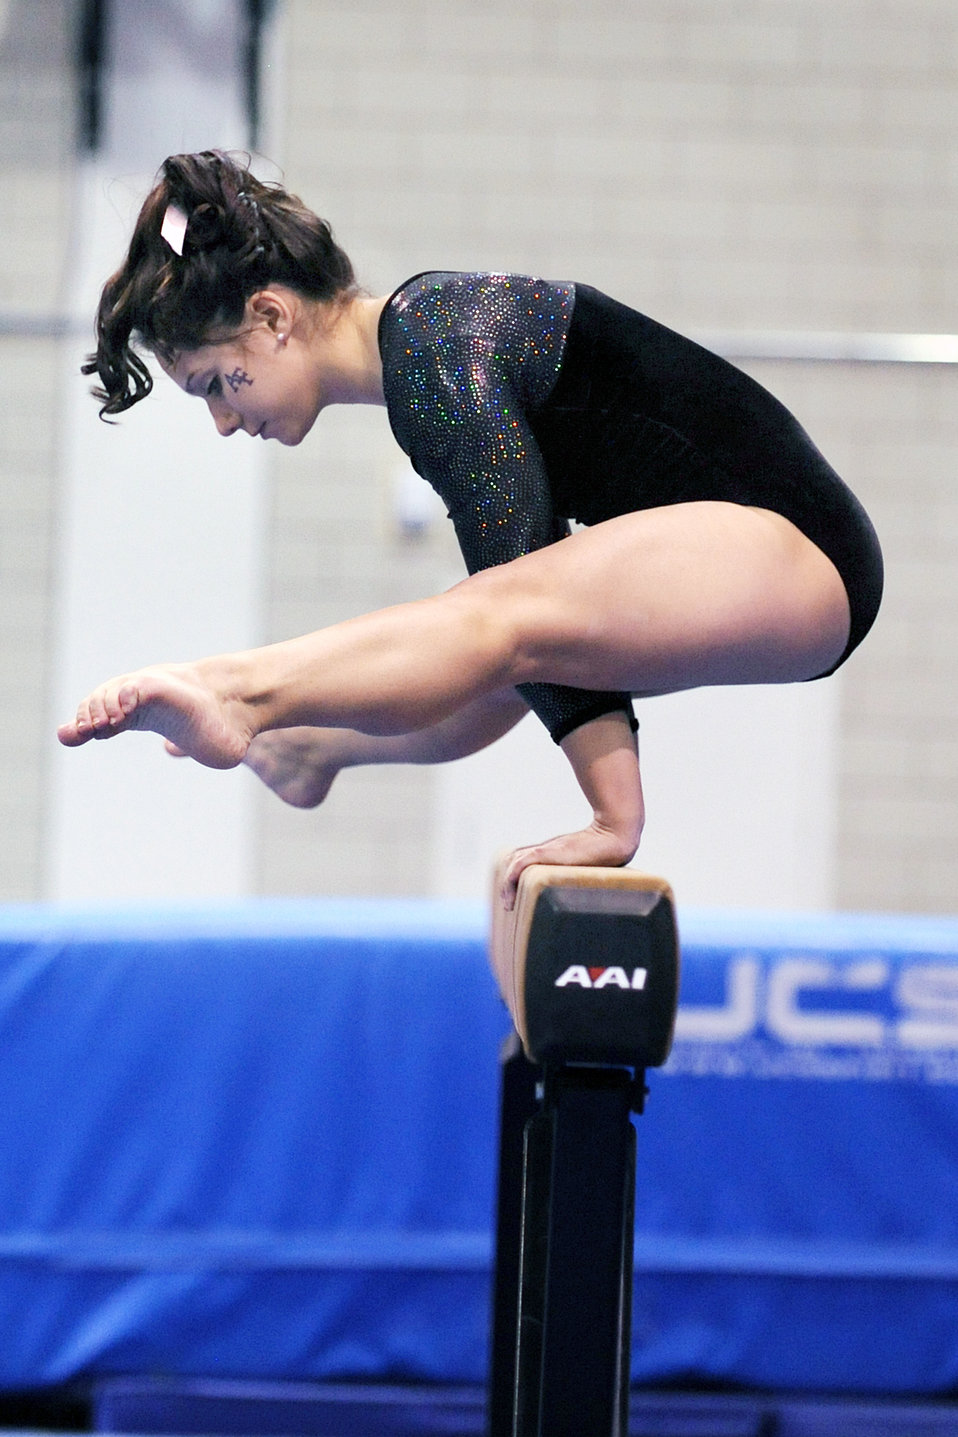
A gymnast on a balance beam

Air Force Academy freshman Britany Calley competes on the balance beam during the second annual Blue-Silver Invitational at the Cadet West Gym Dec. 5, 2009.